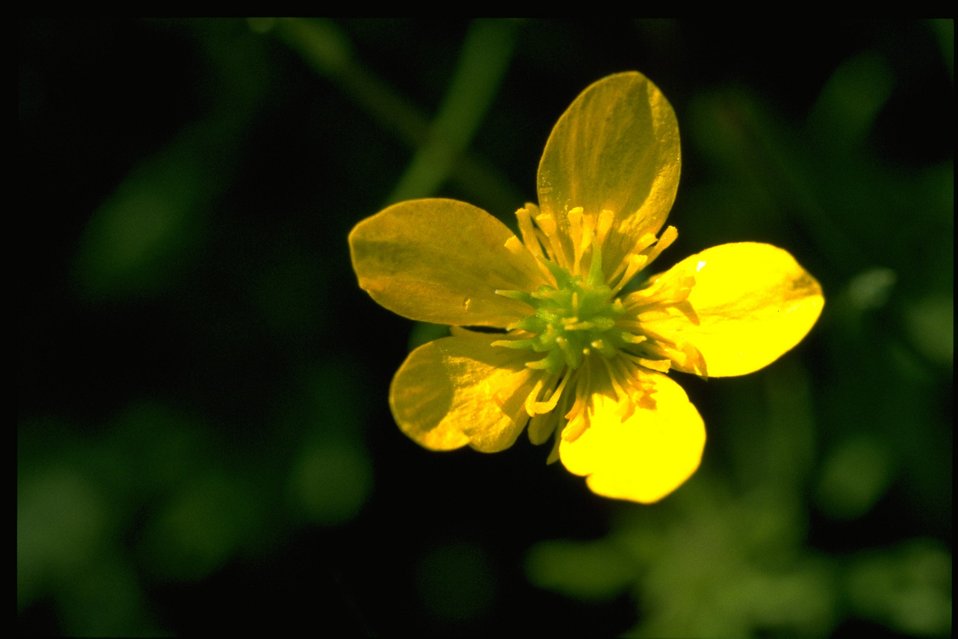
Medium shot of Ranunculus.